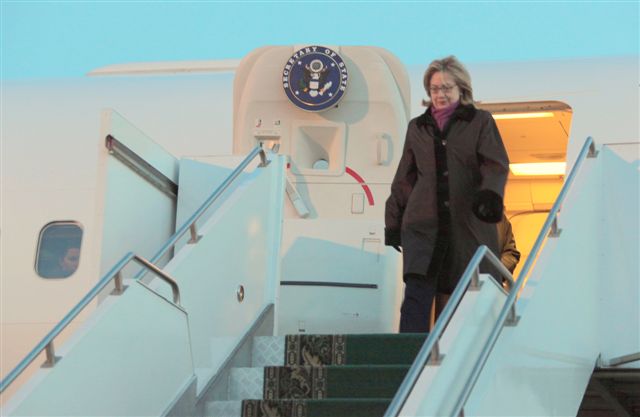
Secretary Clinton Deboards the Plane in Kazakhstan

U.S. Secretary of State Hillary Rodham Clinton deboards the plane in Astana, Kazakhstan, on November 30, 2010.